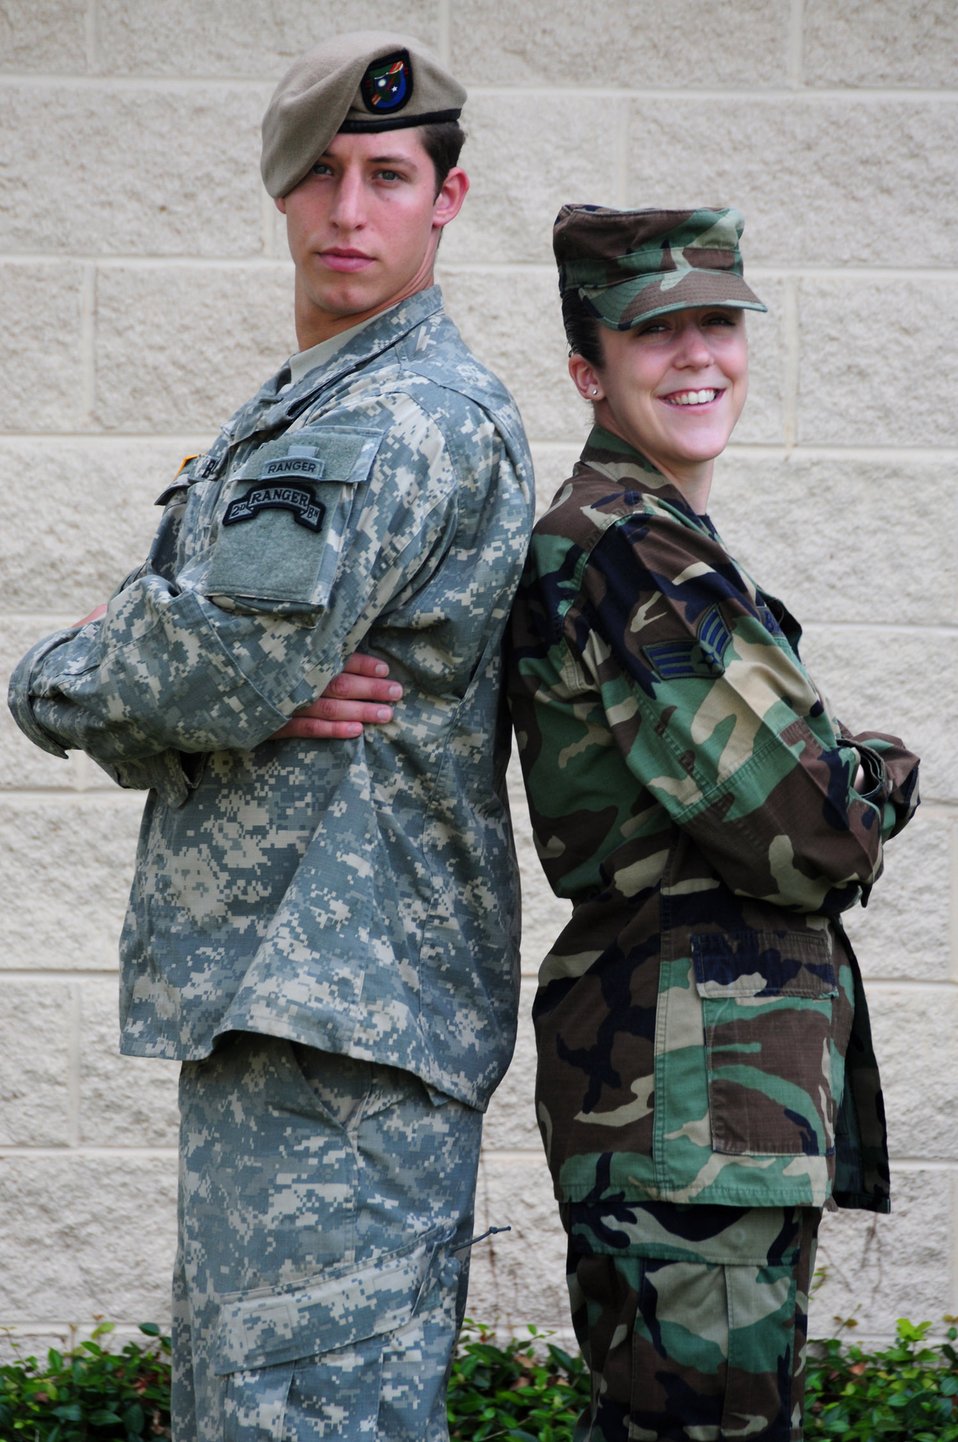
Sister service siblings serve side-by-side

Siblings Army Sgt. William Bullock III and Senior Airman Mary Bullock stand together July 28 at Hurlburt Field, Fla. They said their grandfather, a World War II veteran, was their greatest influence growing up. Sergeant Bullock followed in his footsteps by becoming an Army Ranger. Inspired by both her grandfather and her younger brother, Airman Bullock joined the Air Force. Today, the brother and sister duo sometimes find themselves working together despite being in different services.